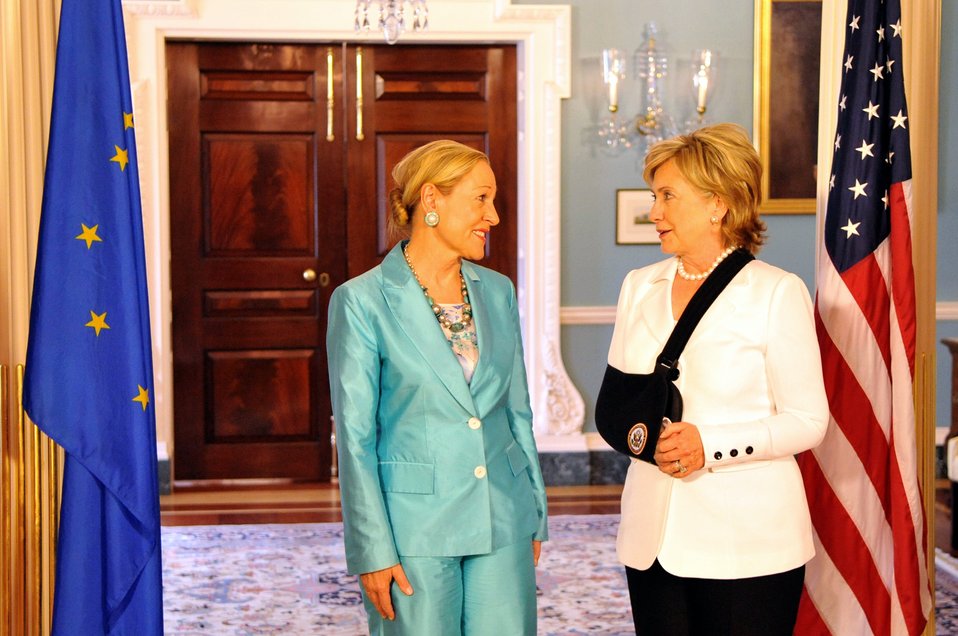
Secretary Clinton Meets With European Commissioner for External Relations and European Neighborhood Policy

U.S. Secretary of State Hillary Rodham Clinton meets with H.E. Dr. Benita Ferrero-Waldner, European Commissioner for External Relations and European Neighborhood Policy at the U.S. Department of State in Washington, DC July 10, 2009.